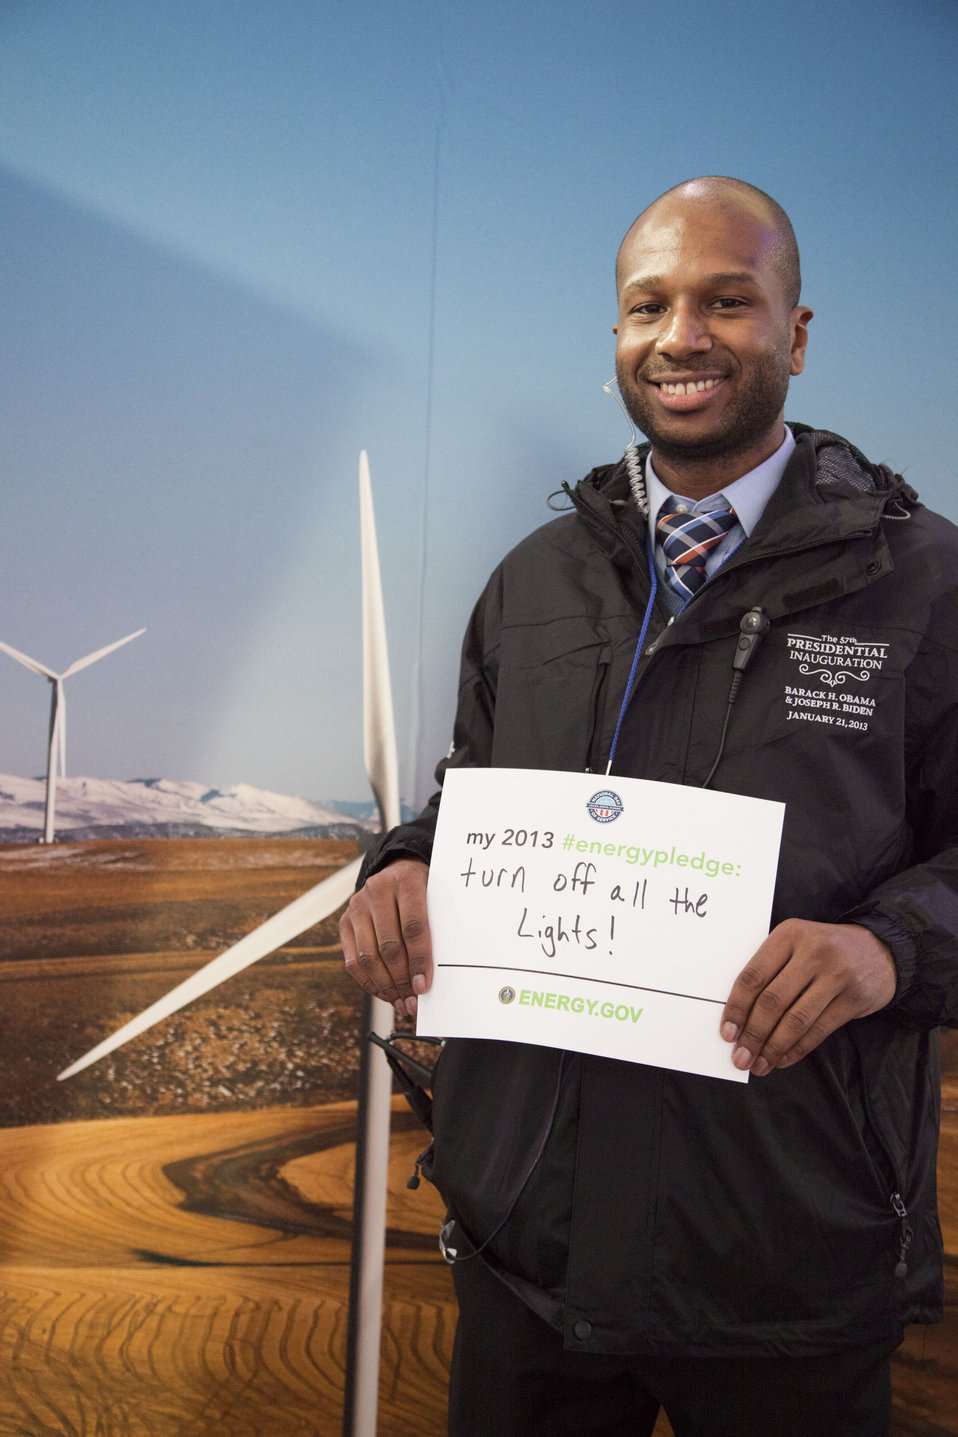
What's your #energypledge?